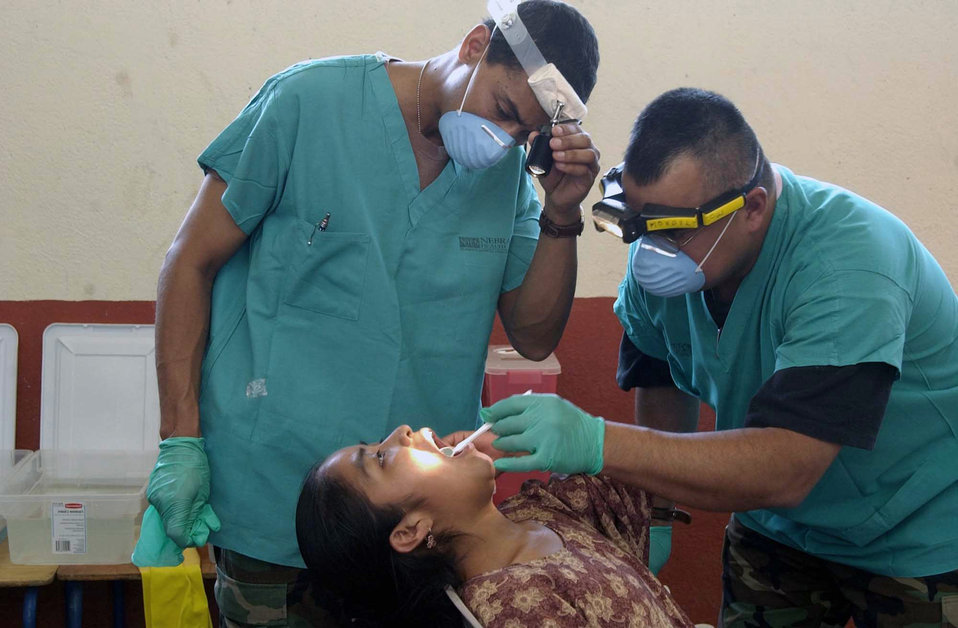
Airmen travel to Guatemala to train, treat patients

GUATEMALA -- Lt. Col. (Dr.) Gene Gaspard (left) and Tech. Sgt. Ray Salazar give a dental examine to a Guatemalan girl. Airmen from the Air Force Reserve Command medical community deployed here for a medical readiness training exercise. During the 10-day deployment, the medical teams treated nearly 1,000 people a day. Sergeant Salazar and Dr. Gaspard are assigned to the 710th Medical Squadron at Offutt Air Force Base, Neb.